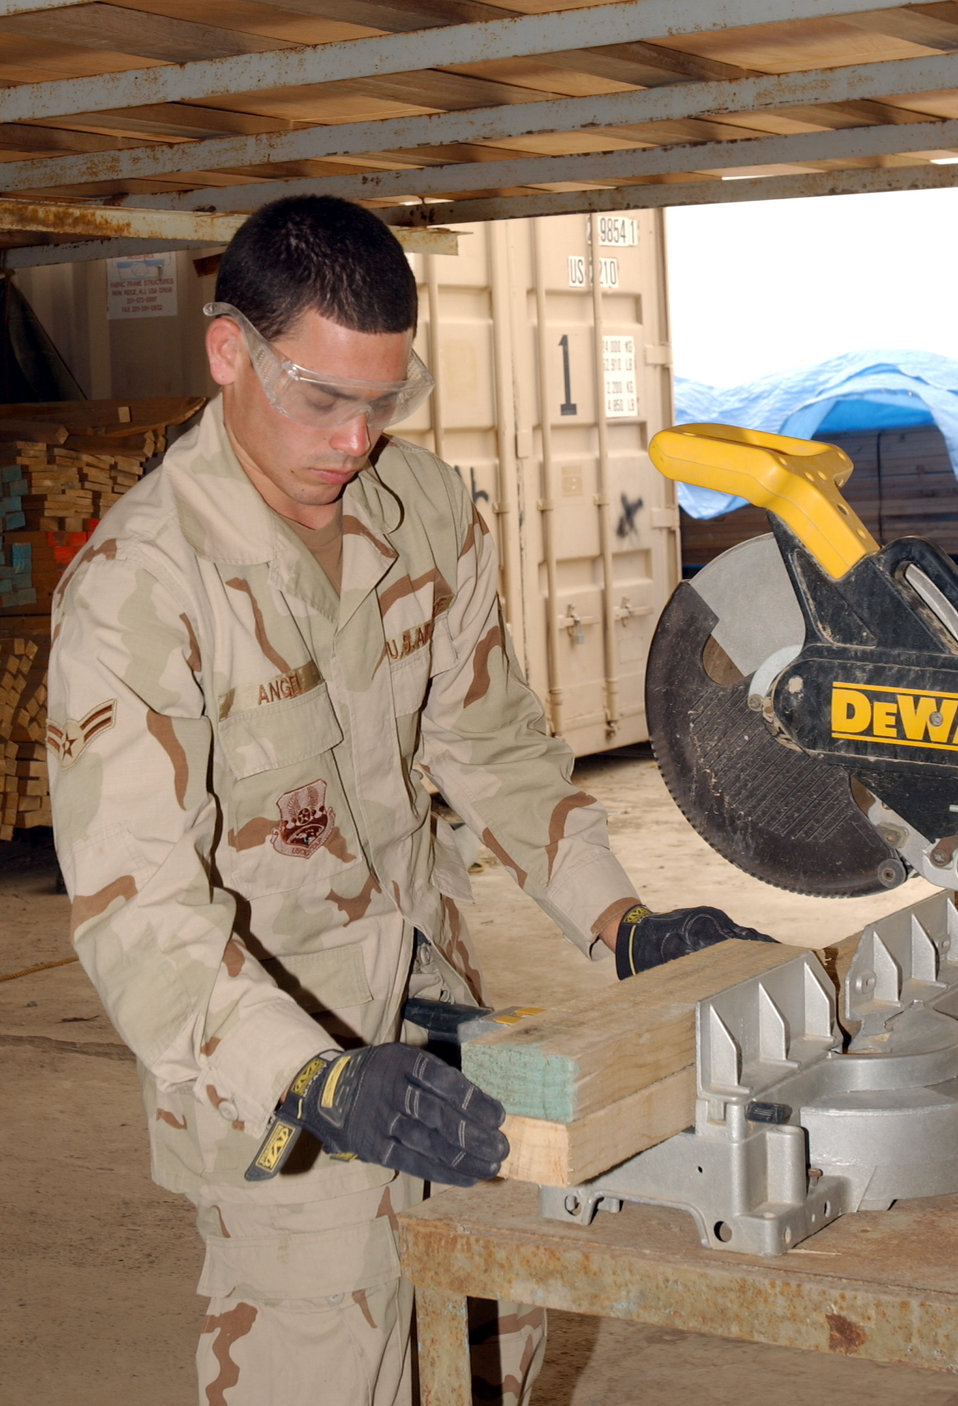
Chip off the block

TALLIL AIR BASE, Iraq -- Airman 1st Class Nathan Angel cuts wood for crates here April 16 in support of Operation Iraqi Freedom. Airman Angel is with the 407th Expeditionary Logistics Readiness Squadron.